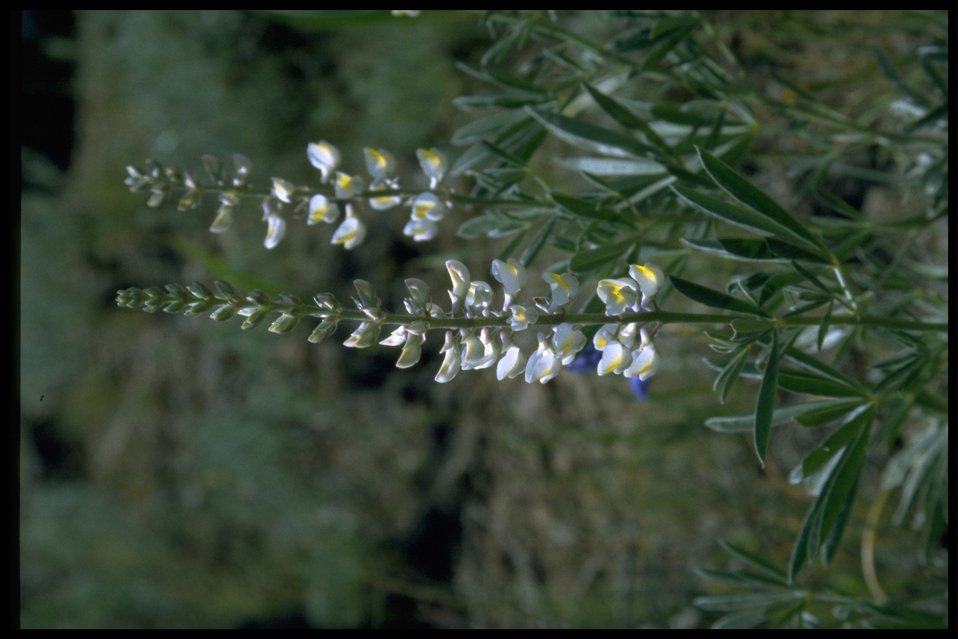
Medium shot of Bigleaf Lupine (white and yellow variant) wildflowers.